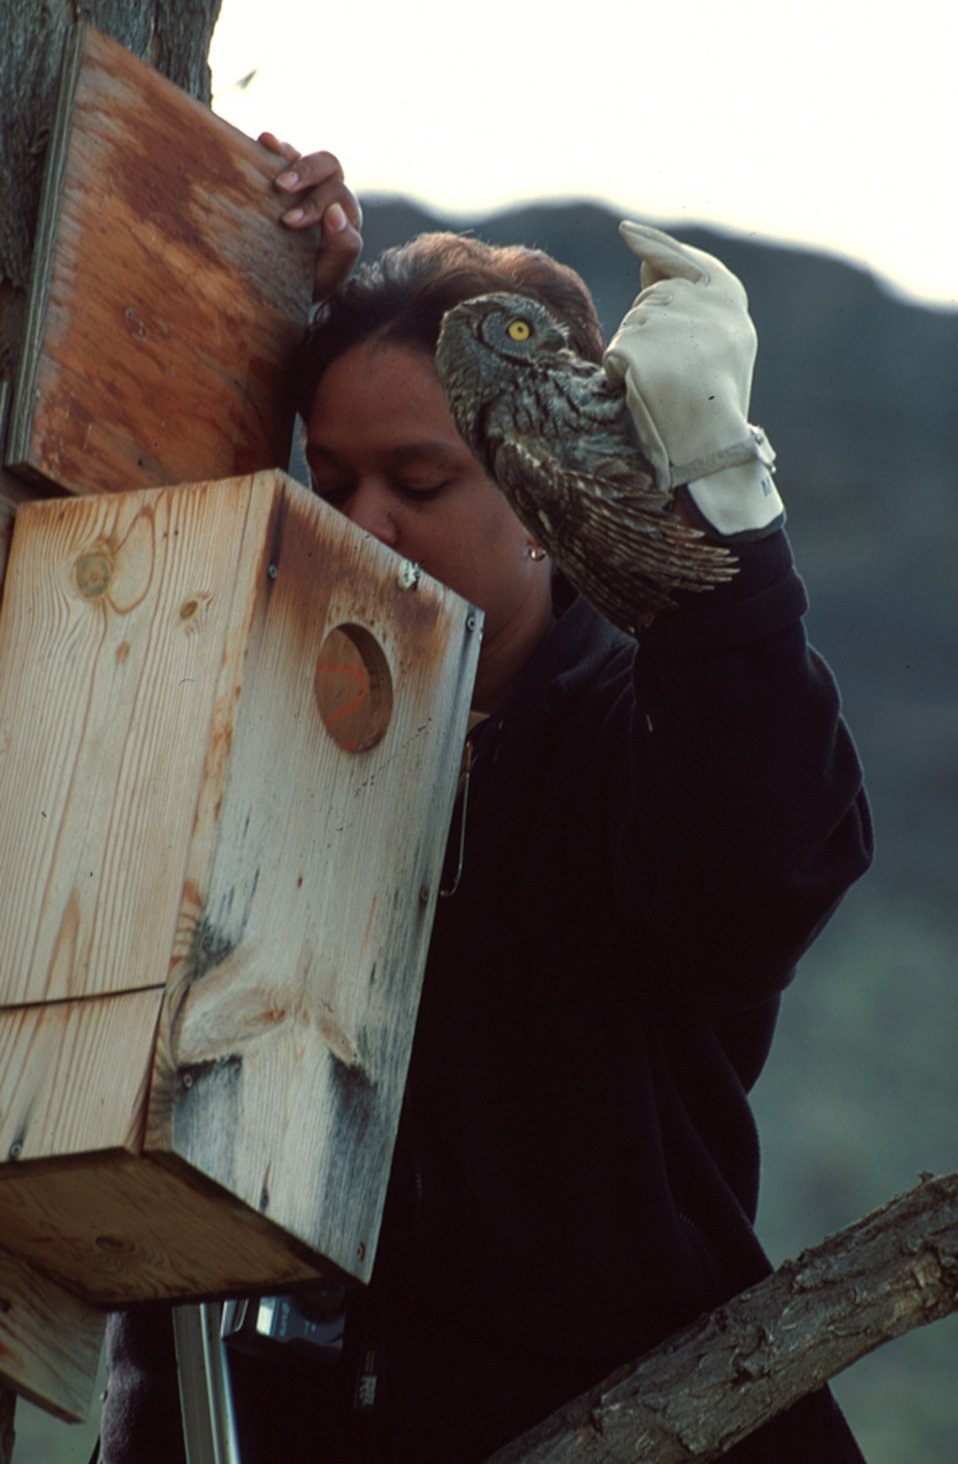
Western Screech Owls in man-made box Owyhee Field Office LSRD Lower Snake River District